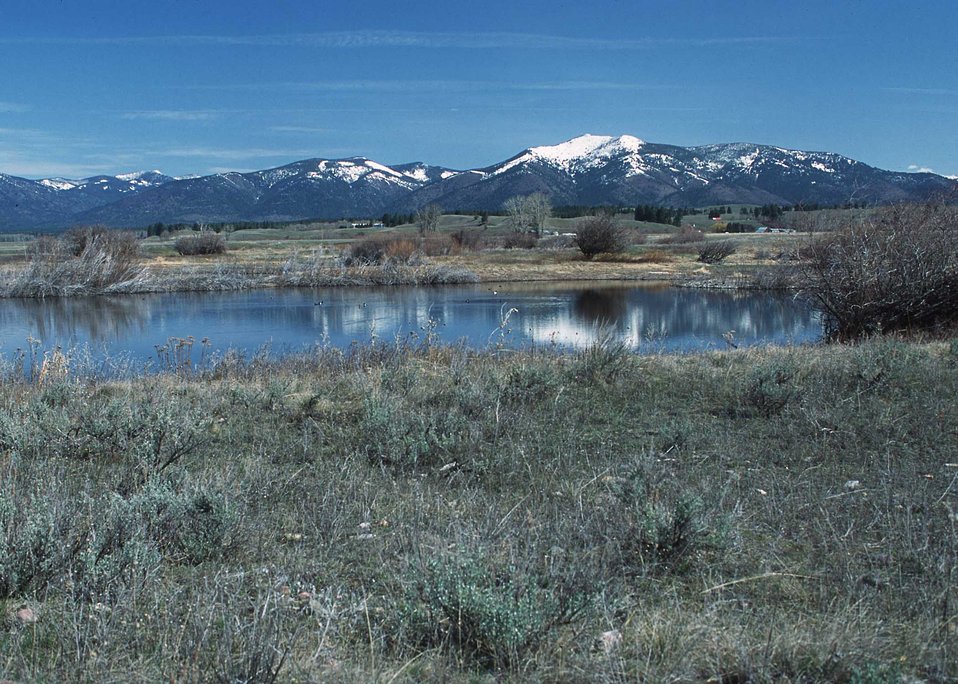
Scenic wetlands in northcentral Montana.